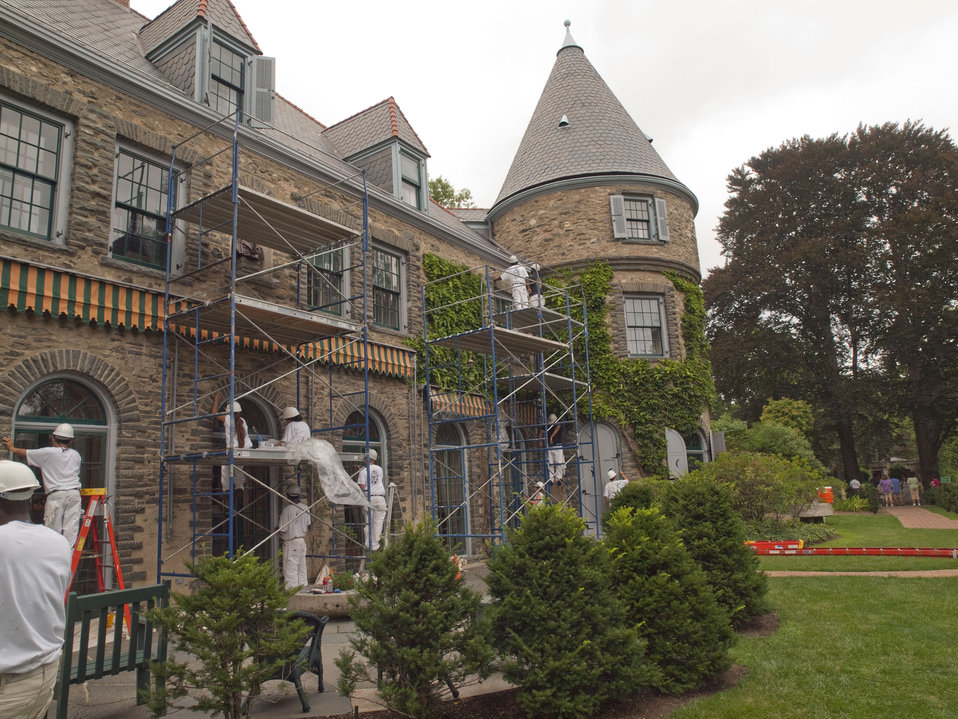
Job Corps students help to restore Grey Towers National Historic Site. $2,440,000 in Recovery Act funds were allocated to repair and refurbish the house and grounds of the ancestral home of the first Chief of the Forest Service and two-term Pennsylvania governor Gifford Pinchot on Tuesday August 3, 2010 in Milford, PA. This project at the 123-year-old site repairs various deficiencies with the buildings and grounds, restores areas of the historic landscape, improves visitor safety and site security, provides a more sustainable facility, and enhances the visitor experience. It helps to ensure the historic site is maintained for years to come.